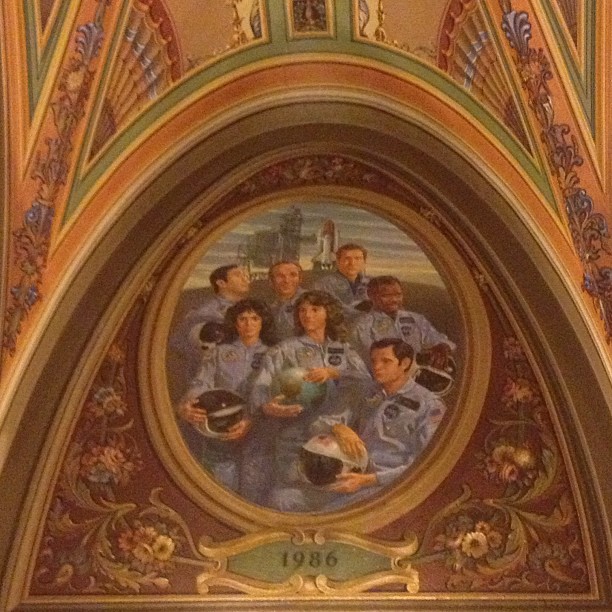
The Challenger Crew, Brumidi Corridors

The Challenger Crew, Oil on canvas by Charles Schmidt, 1987